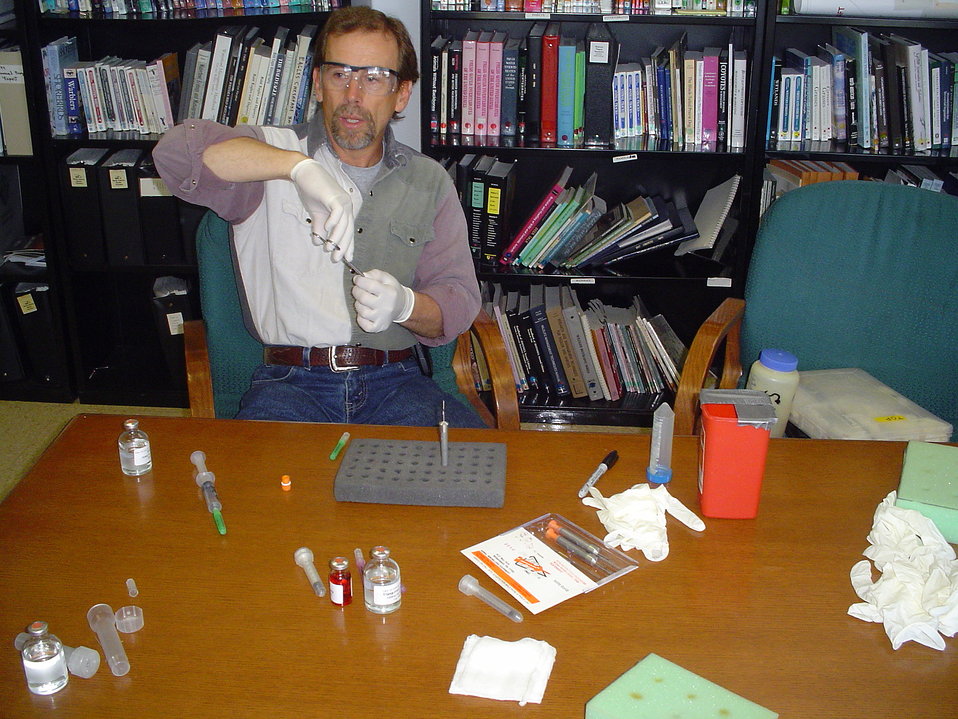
Chemical Immobilization Training

Dr. Tom Roffe demonstrates safe dart loading procedures during a chemical immobilization training at the Rocky Mountain Arsenal in Colorado.